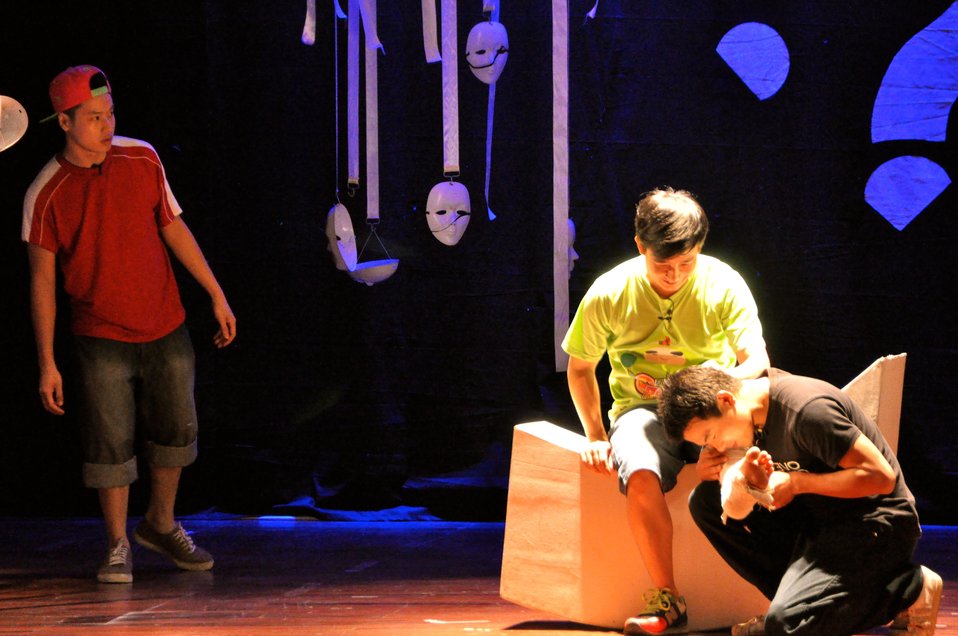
PEPFAR Musical Questions and Exclamations

Hanoi, May 17, 2013